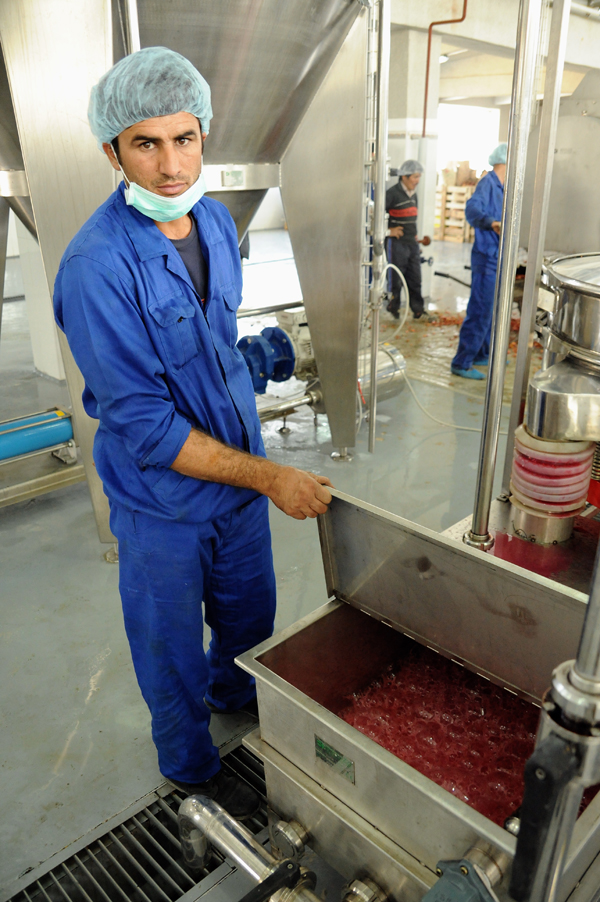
ASAP Juice Factory 2009 10

A worker at the Omaid Bahar Fruit Processing Company shows the factory's modern facilities. The factory will produce juice from Afghan pomegranates, apples, melons, apricots, and peaches.